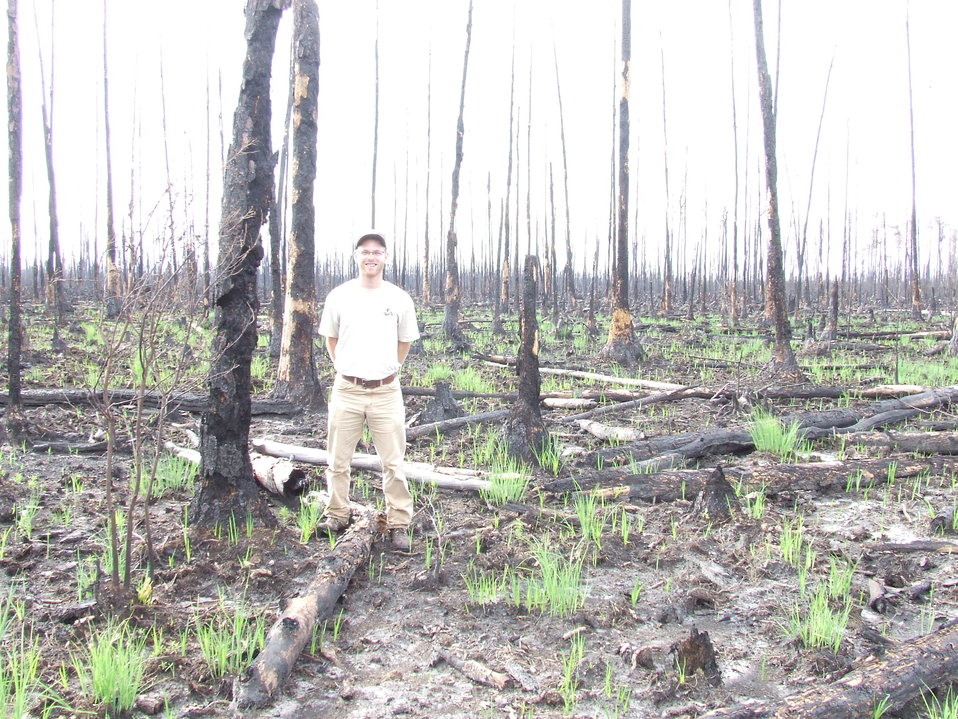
regrowth after fire, Okefenokee National Wildlife Refuge, GA

2011 Wilderness Fellow Ben Weiss stands amidst early new growth after the Honey Prairie Fire, Okefenokee National Wildlife Refuge